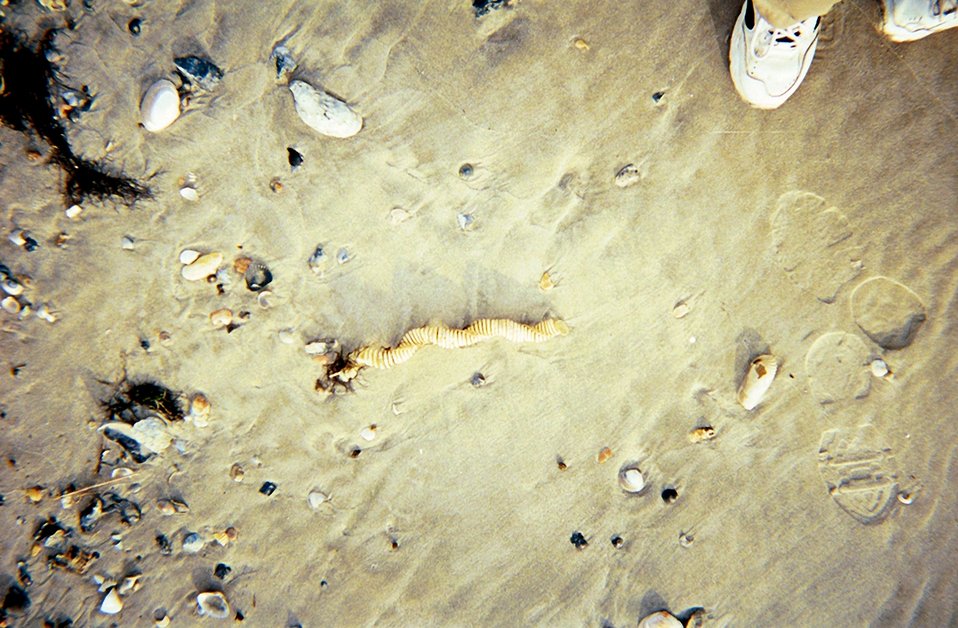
A whelk egg case, sea shells, and shoes.